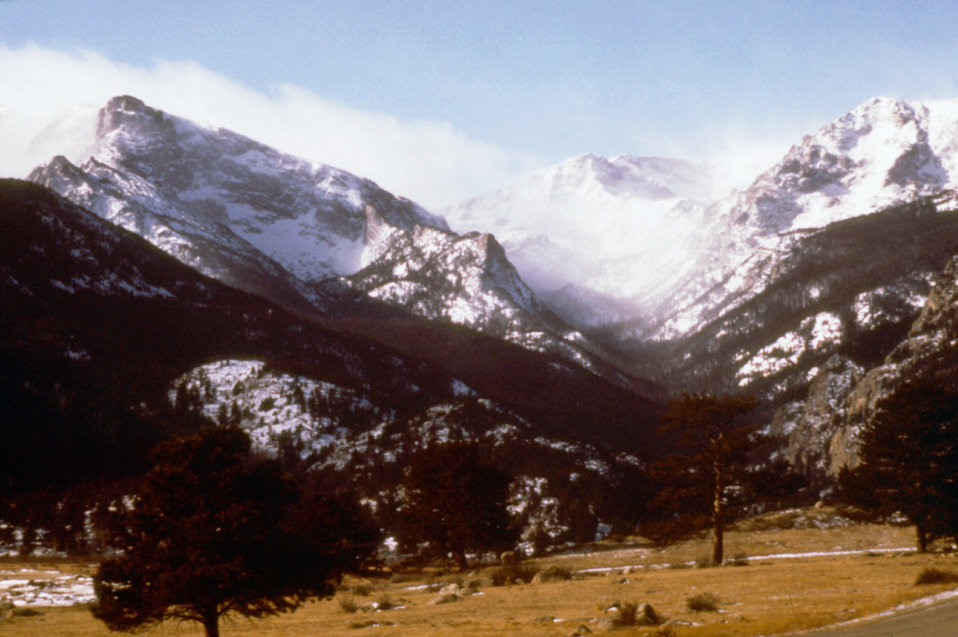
This is an image of Estes Park, Colorado, the site of a 1975 'sylvatic plague', and 'Colorado tick fever' study.